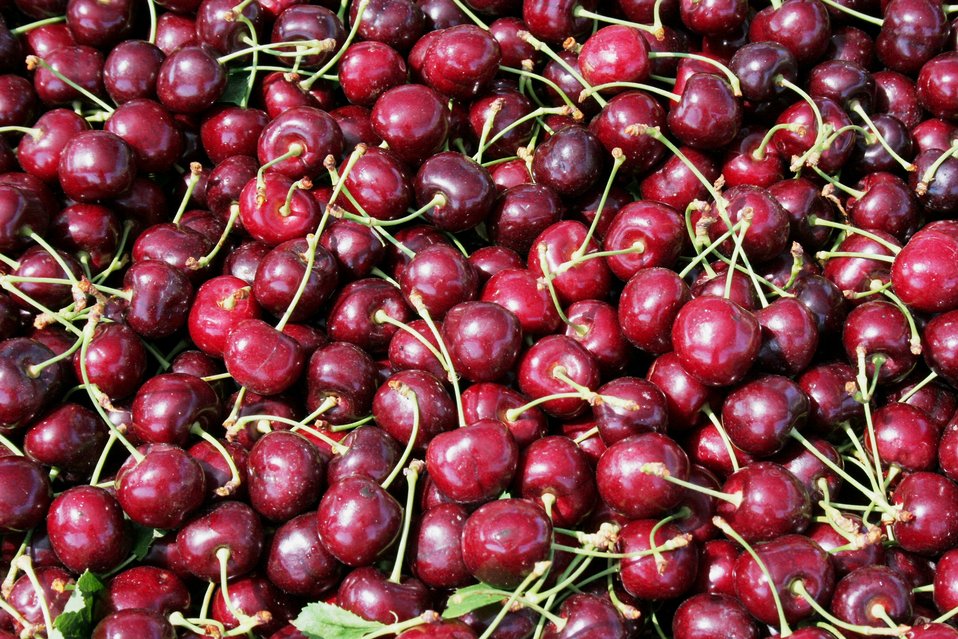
On the Road with Mike Taylor

Harvested cherries at Stemilt Growers in Wenatchee, WA. FDA Deputy Commissioner Michael Taylor and colleagues started a five-day tour of the Pacific Northwest on Sunday, Aug. 11, 2013 -- visiting Idaho, Oregon and Washington -- to get a first-hand look at produce production and irrigation operations, and to discuss the proposed Produce Safety Rule with growers, food industry representatives and state officials. For more about Mike's multi-region tour, read these FDA Voice blog posts:

• Hearing the Concerns of Maine Growers Striving for Agricultural Diversity
• On the Road with Mike Taylor: Touring the Pacific Northwest
• On the Road with Mike Taylor, Day 2: Frank Talk in Farm Country
• On the Road with Mike Taylor, Day 3: Families and Partnerships
• On the Road with Mike Taylor, Day 4: Looking to the Future